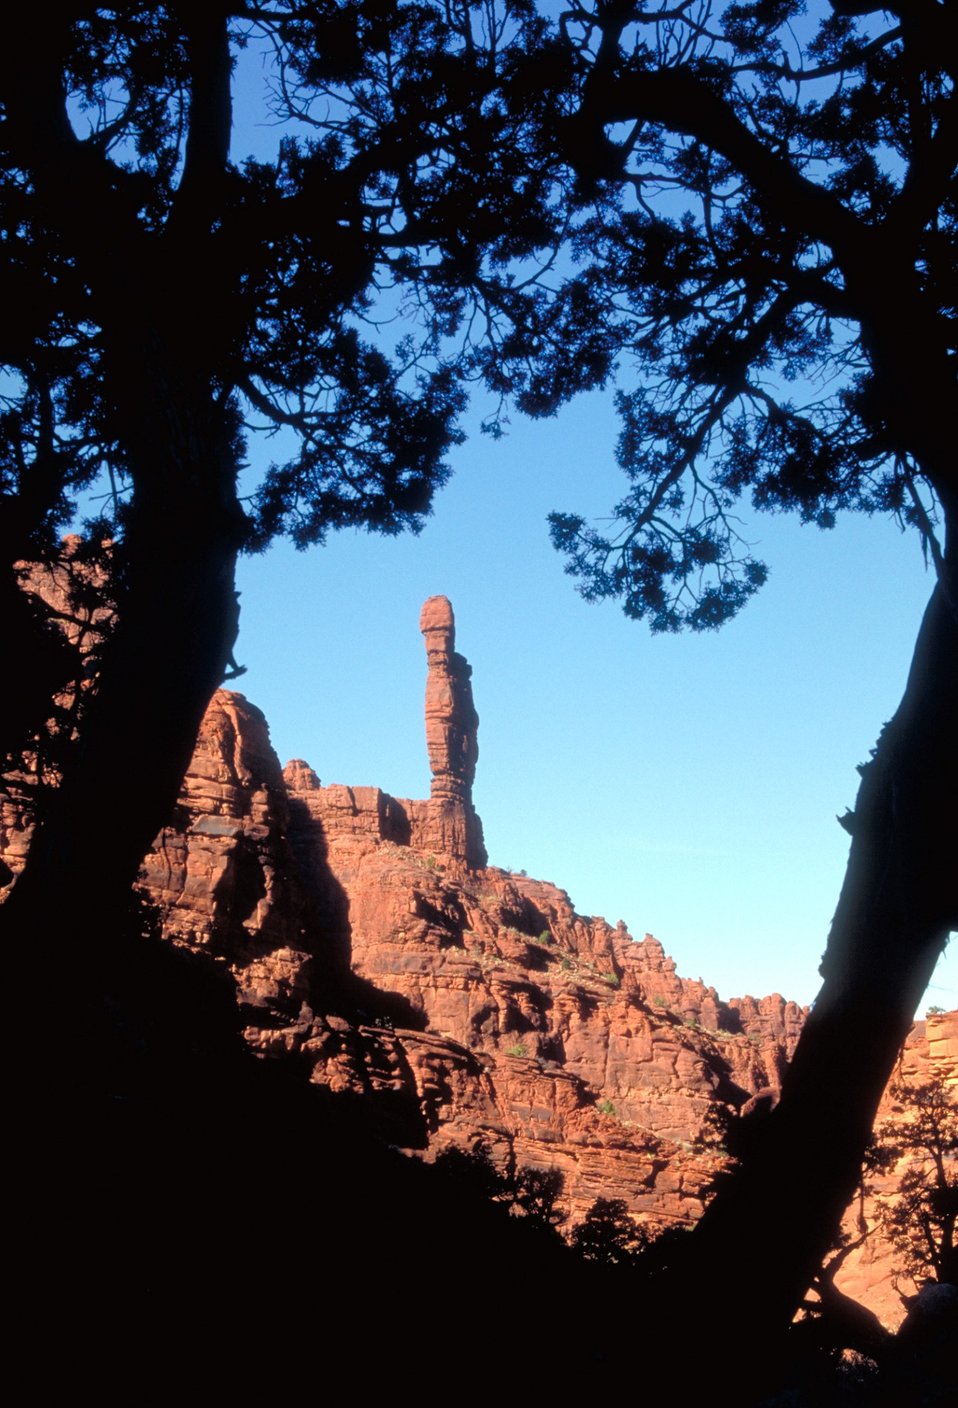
Spire in Onion Creek drainage.